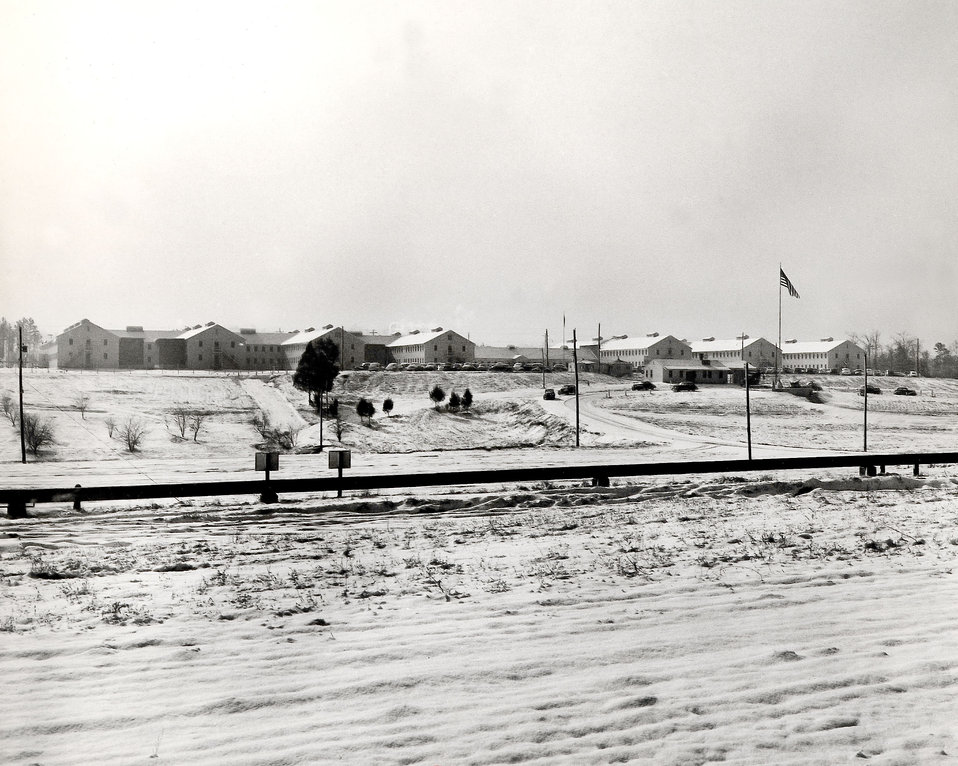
AEC Adm. Bldg. in Snow Oak Ridge

4309-8 DOE photo Ed Westcott 2/11/1948 Oak Ridge Tennessee